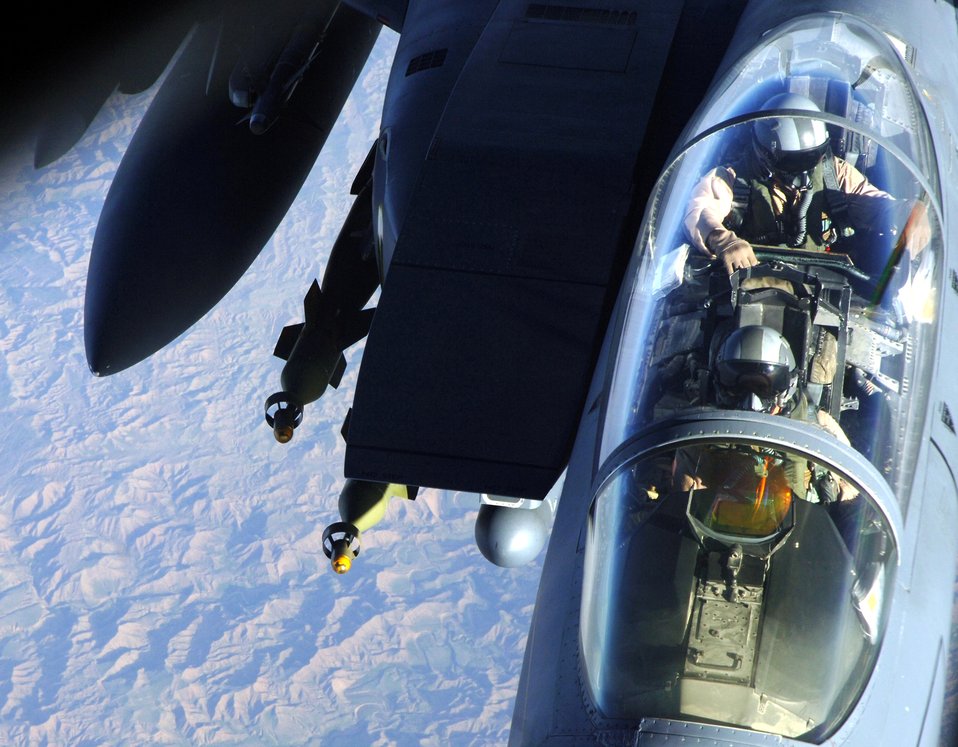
A view to a refuel

An F-15E Strike Eagle is refueled by a KC-135 Stratotanker over Southwest Asia on Tuesday, April 11, 2006. The F-15E is deployed to the 336th Expeditionary Fighter Squadron from Seymour Johnson Air Force Base, N.C. The KC-135 is deployed to the 340th Expeditionary Air Refueling Squadron from Fairchild Air Force Base, Wash.